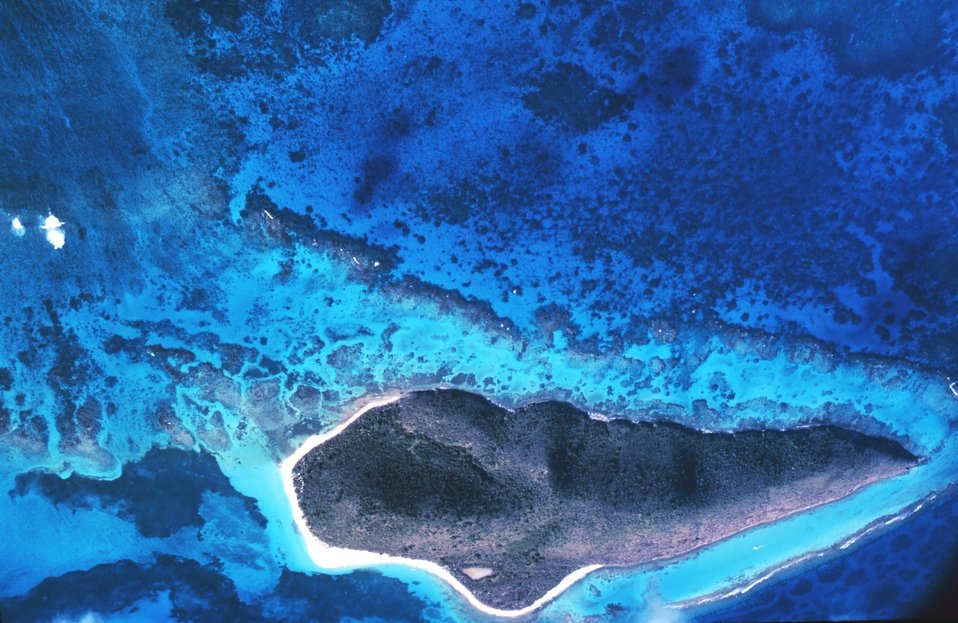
Buck Island Reef National Monument - a jewel in a tropical sea.